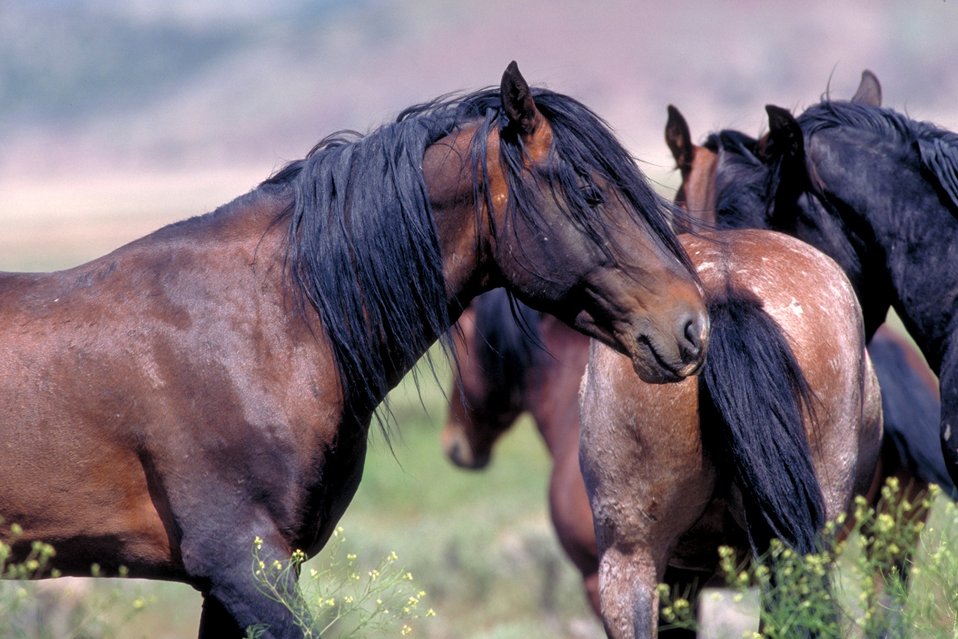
Onaqui Herd near Dugway, Utah.